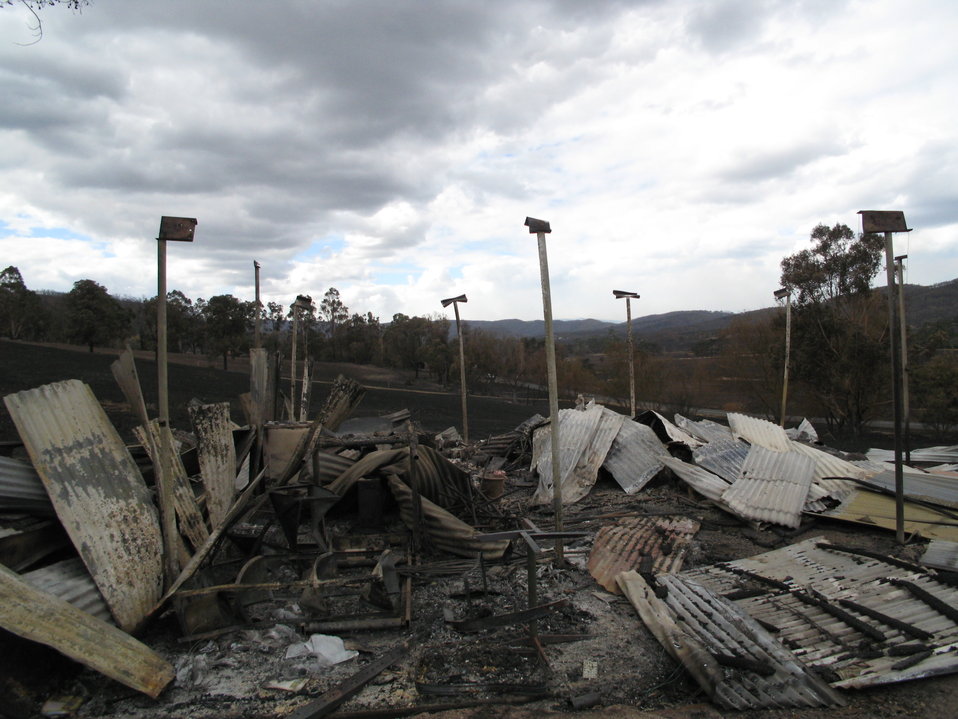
A house damaged by bushfires in the Kinglake complex, in Steels Creek. Photo taken by myself with verbal permission of the owners, 10th of February, 2009.